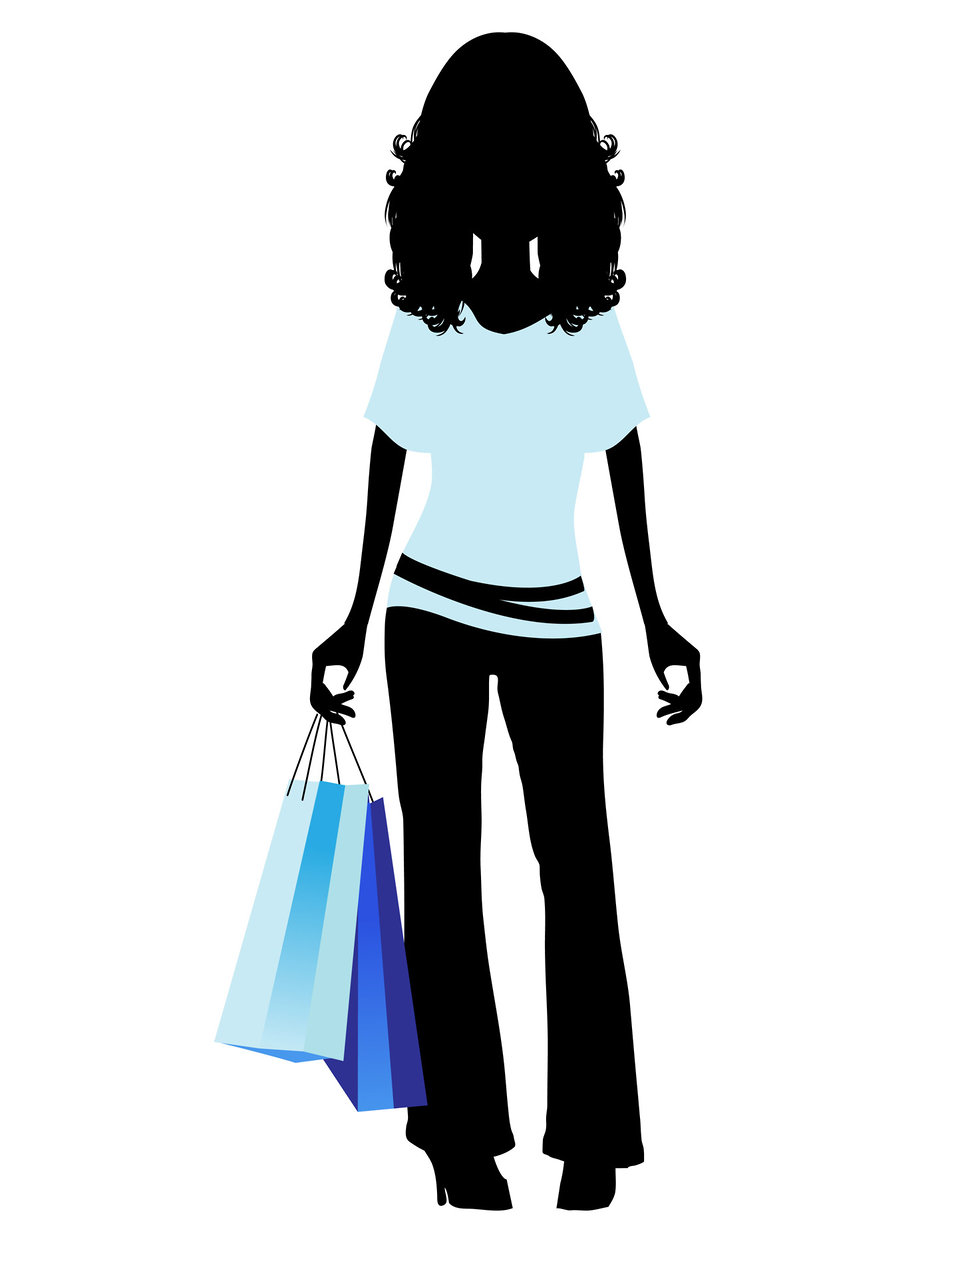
Fashion shopping girl clipart

Fashionable young woman shopping clipart for scrapbooking.